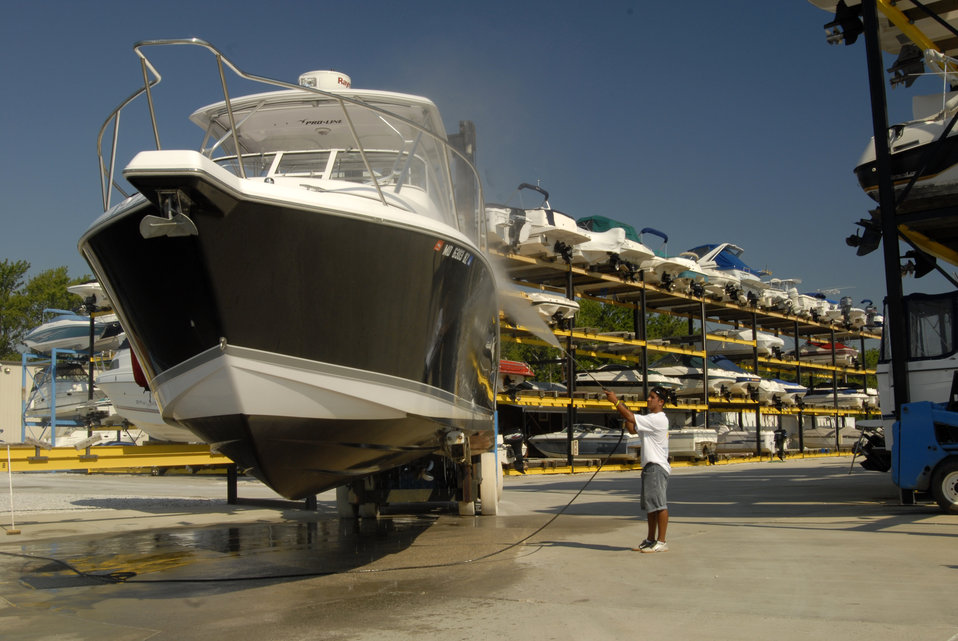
After fishing in the Chesapeake Bay in Maryland on July 14, 2008 boaters wash down the hulls of their boats to prevent spread of aquatic invasive species to other water areas in Maryland. The goal of the U.S. Department of Agriculture’s (USDA) Forest Service (FS) invasive species program is to reduce, minimize, or eliminate the potential for introduction, establishment, spread, and impact of invasive species across all landscapes and ownerships.